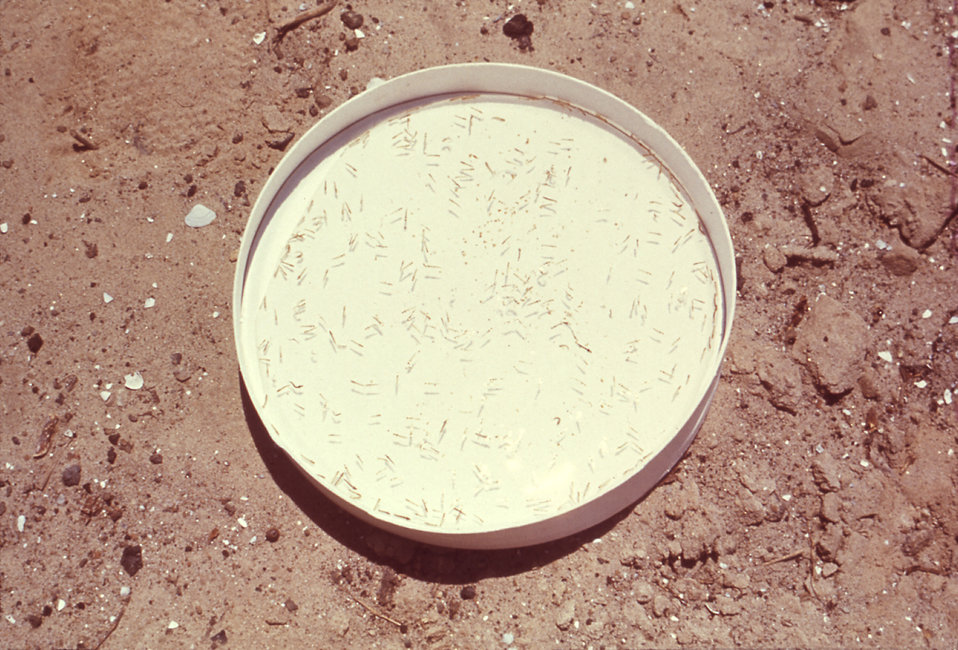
This 1981 photograph depicted a close-up view of a collection of mosquito larvae floating in an aqueous solution inside the lid of a shipping container, which was shipped to a laboratory to be counted, and to be classified for bioassay purposes.